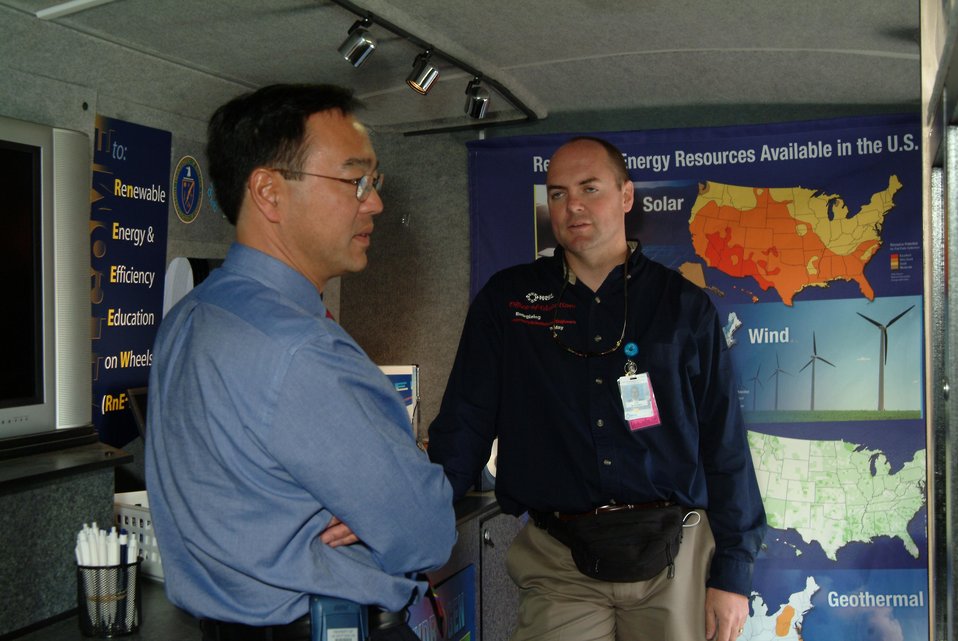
INSIDE THE RENEWABLE ENERGY AND ENERGY EFFICIENCY ON THE WHEELS BUS.

THIS PROJECT FEATURES AN EDUCATIONAL BUS AND A TEN FOOT TRAILER, DESIGNED TO BRING RENEWABLE ENERGY TECHNOLOGIES AND ENERGY EFFICIENCY PROGRAMS AND INFORMATION TO CONSUMERS, TEACHERS AND STUDENTS, AND COMMUNITY VENUES. THE BUS AND TRAILER ARE EQUIPPED WITH HANDS ON EDUCATIONAL WORKSTATIONS, ELECTRONIC MEDIA, AND TEACHER RESOURCE MATERIALS.